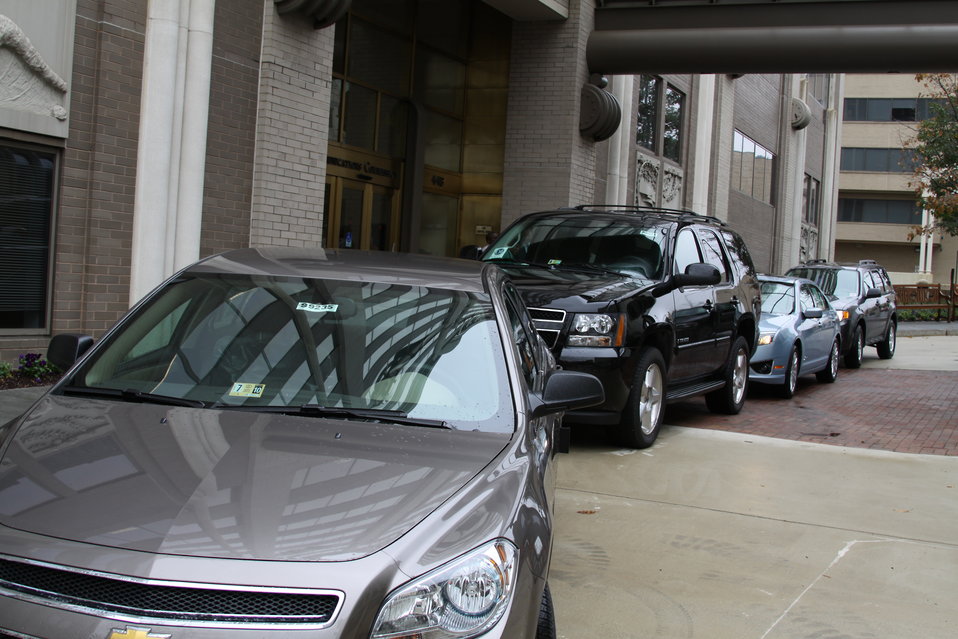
FCC Official Vehicle Tour